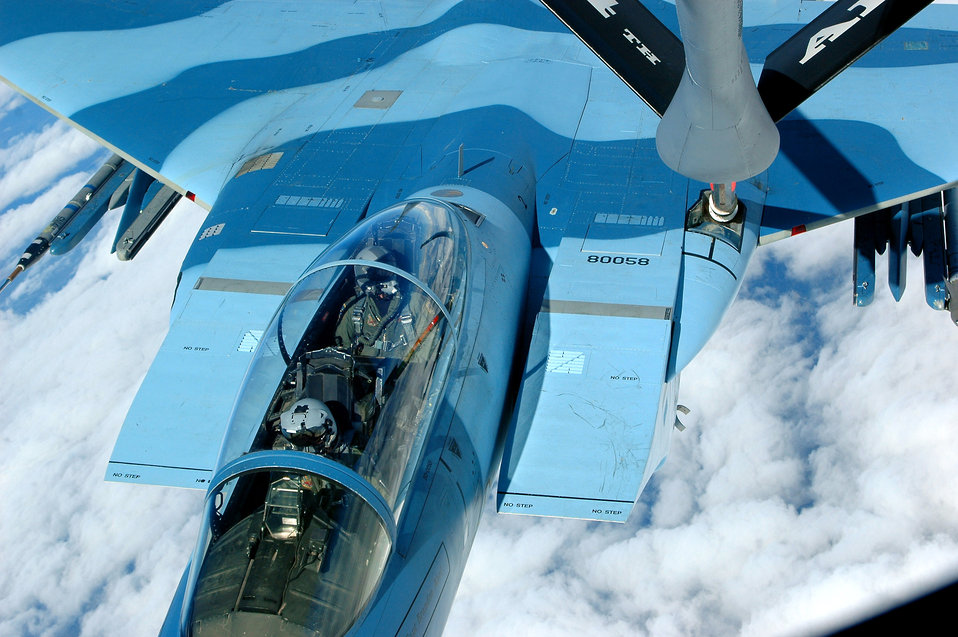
Tankers keep aircraft in the fight at Red Flag-Alaska

A KC-135 Stratotanker from the 434th Air Refueling Wing at Grissom Air Reserve Base, Ind., provides in-flight refueling to an F-15 Eagle from the 65th Aggressor Squadron over the Pacific Alaska Range Complex during Red Flag-Alaska July 16. Red Flag-Alaska is a multinational air combat training exercise that began July 12 and will conclude July 28.